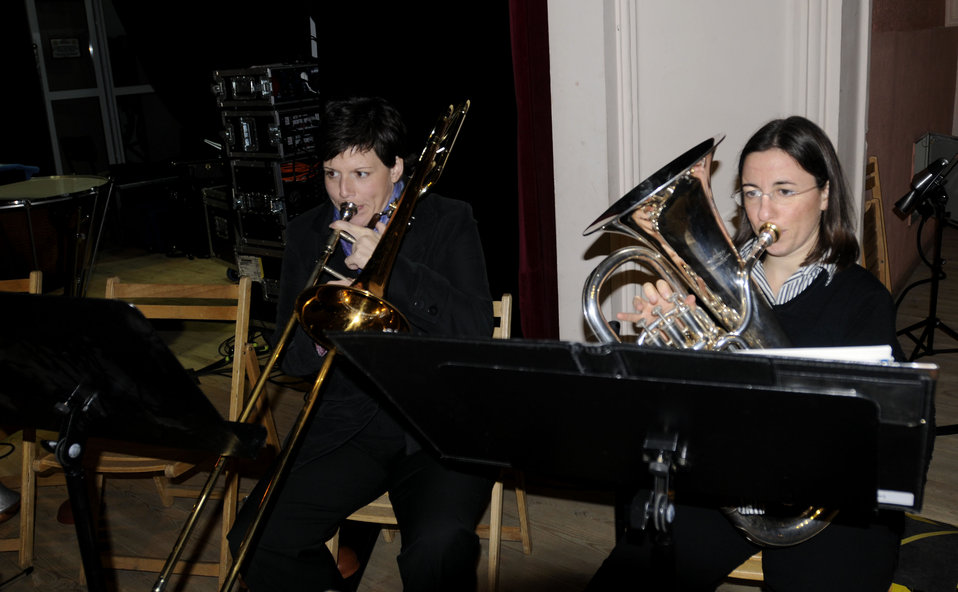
USAFE Band tours Poland

Staff Sgts. Saundra Sininger (left) and Meredith Healy (right) practice at the Cultural Center of the Pomeranian Military Ward Oct. 25, 2009, in Bydgoszcz, Poland. More than 2,500 people attended this concert series which commemorates 90 years of diplomatic relations between the United States and Poland.